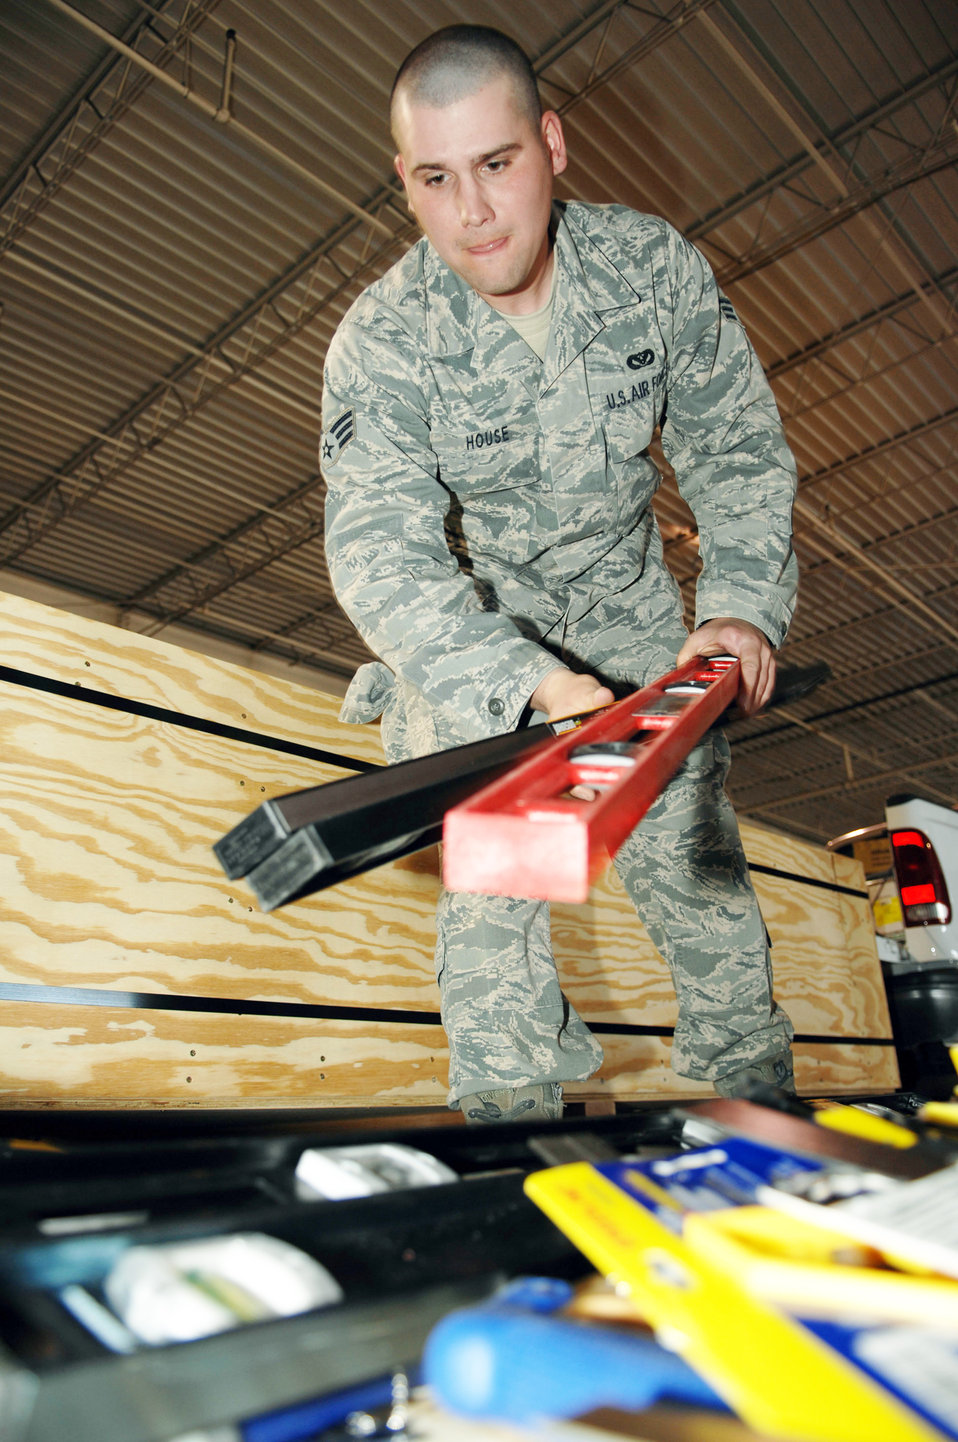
Team heads to Chile for air show, but not empty-handed

Senior Airman Clinton House loads tools into a relief package March 17, 2010, at Holloman Air Force Base, N.M. Members of the 49th Civil Engineer Squadron put together a package of tools and supplies to assist in the relief operations in Chile following the 8.8 magnitude earthquake that hit the South American nation Feb. 27, 2010. Airman House is assigned to the 49th CES.